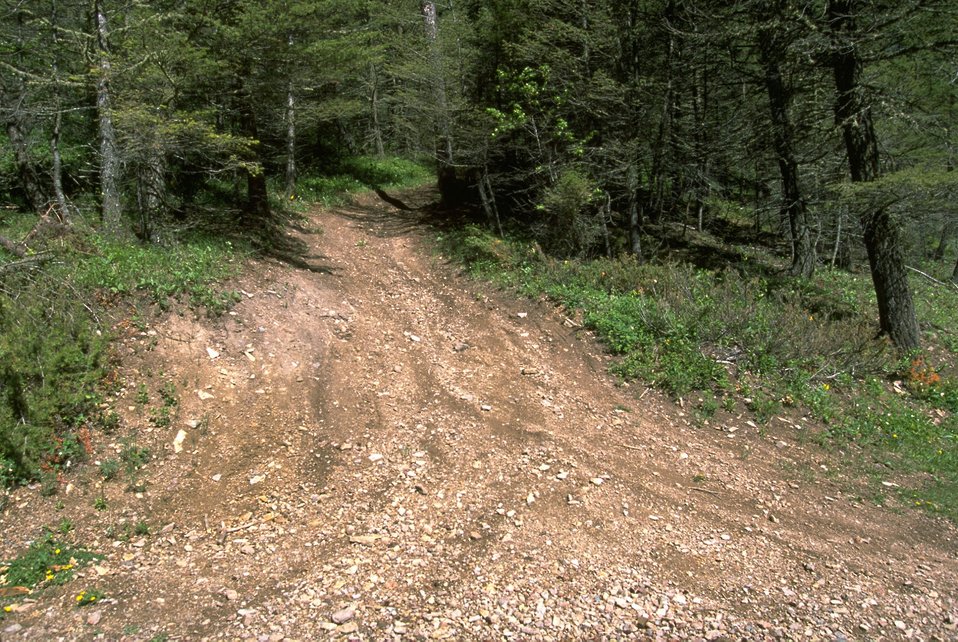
Damage to road from off-road vehicles in the Judith Mountains